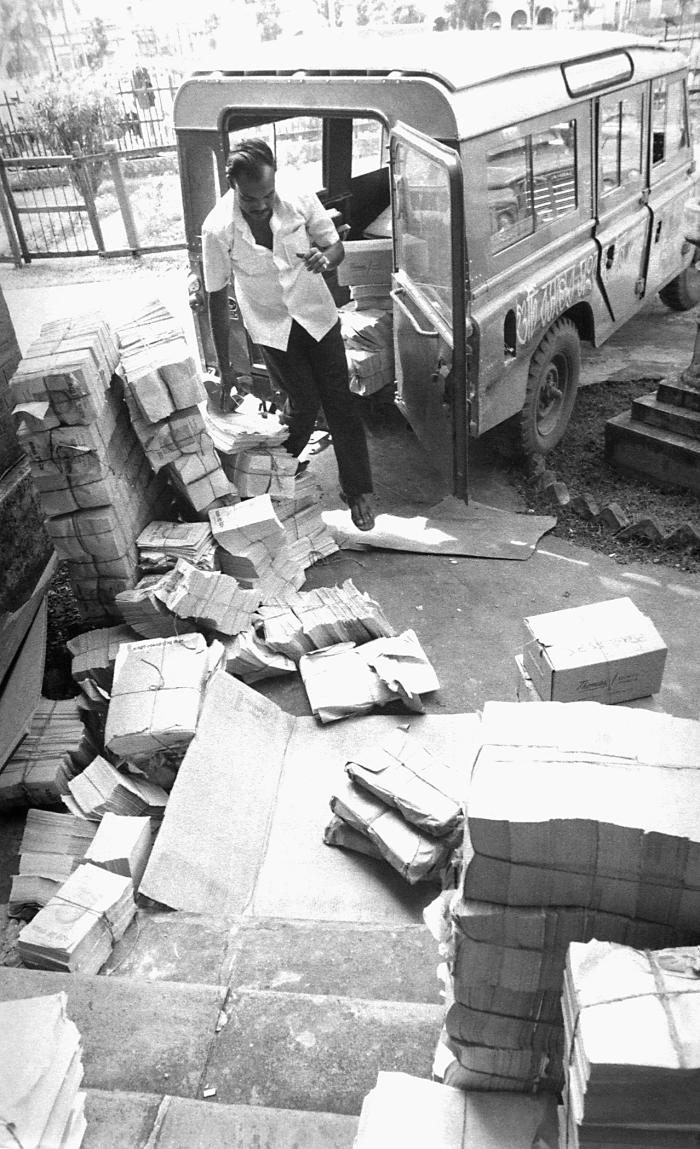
During the Bangladesh smallpox eradication campaign, information dissemination was one of the key factors involved in the effort's successful outcome. These piles of leaflets were on their way to being distributed throughout the local Bangladesh communities.